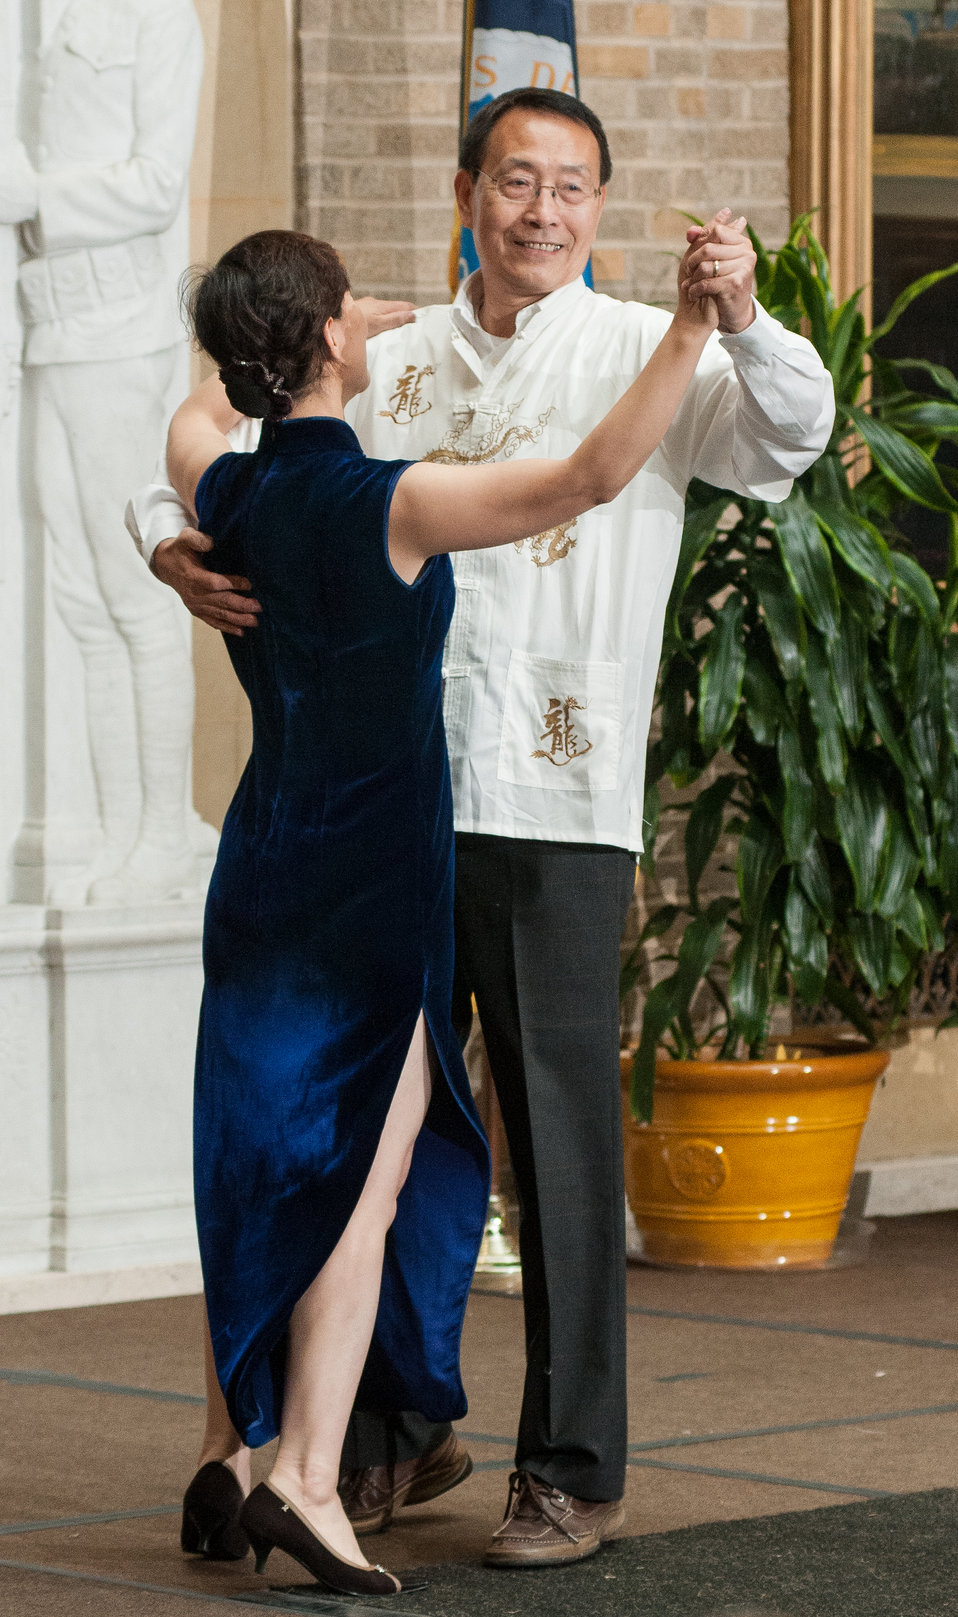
Traditional clothing from various Asian countries were demonstrated during this show of clothing, part of the U.S. Department of Agriculture (USDA) Asian Pacific American Heritage Month Observance program, at the USDA headquarters, Whitten Building patio, in Washington, D.C., on Thursday, May 23, 2013. This year’s theme is “Building leadership; Embracing the Cultural Values and Inclusions.”